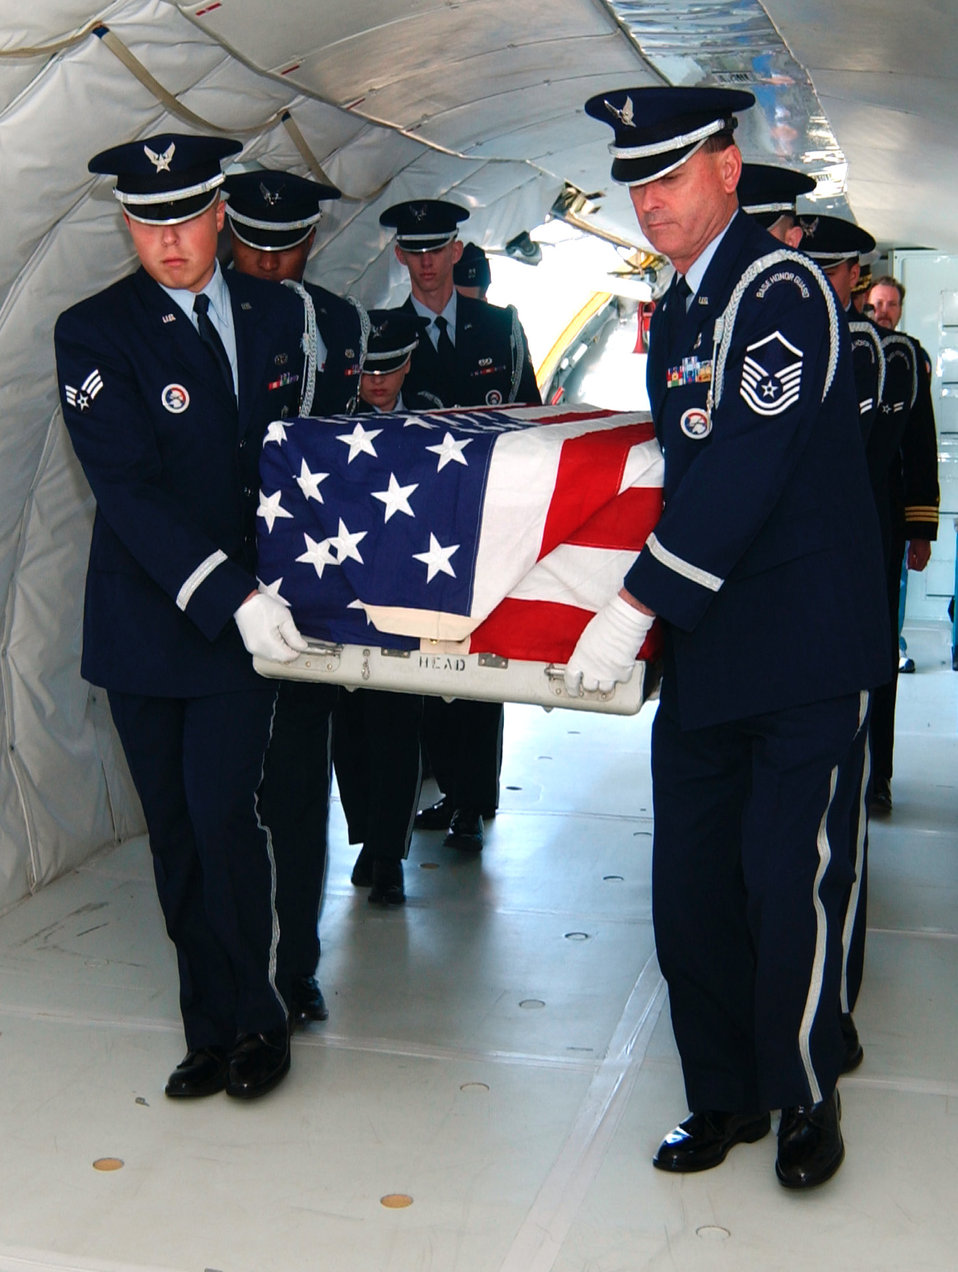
Honoring Columbia's crew

BARKSDALE AIR FORCE BASE, La. -- The base honor guard here carries the remains of a crew member of Space Shuttle Columbia onto a NASA C-135 aircraft Feb. 12. The aircraft flew the remains to the Dover Air Force Base, Del., mortuary, where they were identified.